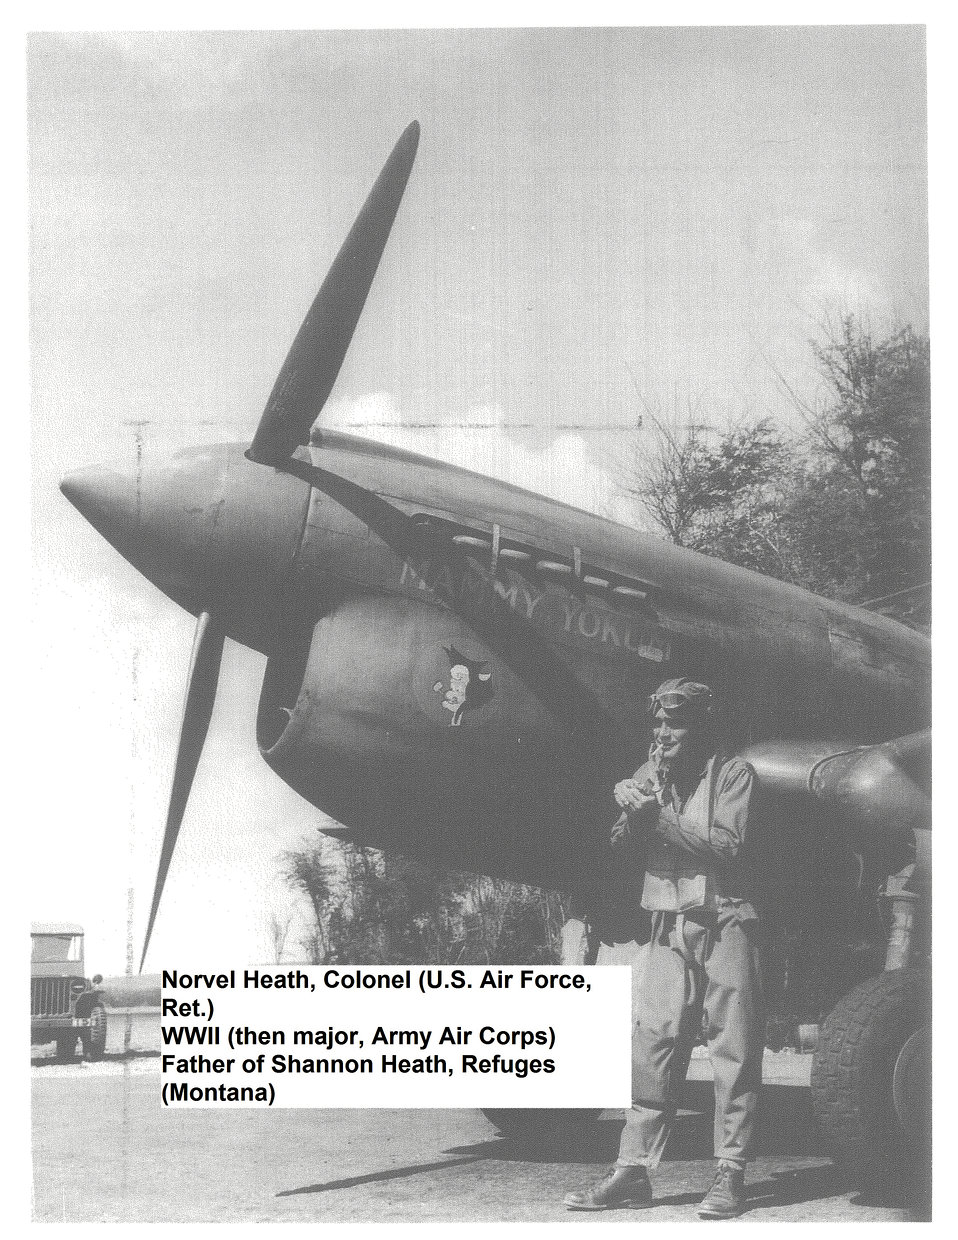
Norvel Heath

Shannon Heath's (Montana Refuges) father, Norvel Heath is a retired Colonel in the Air Force and served during WWII.